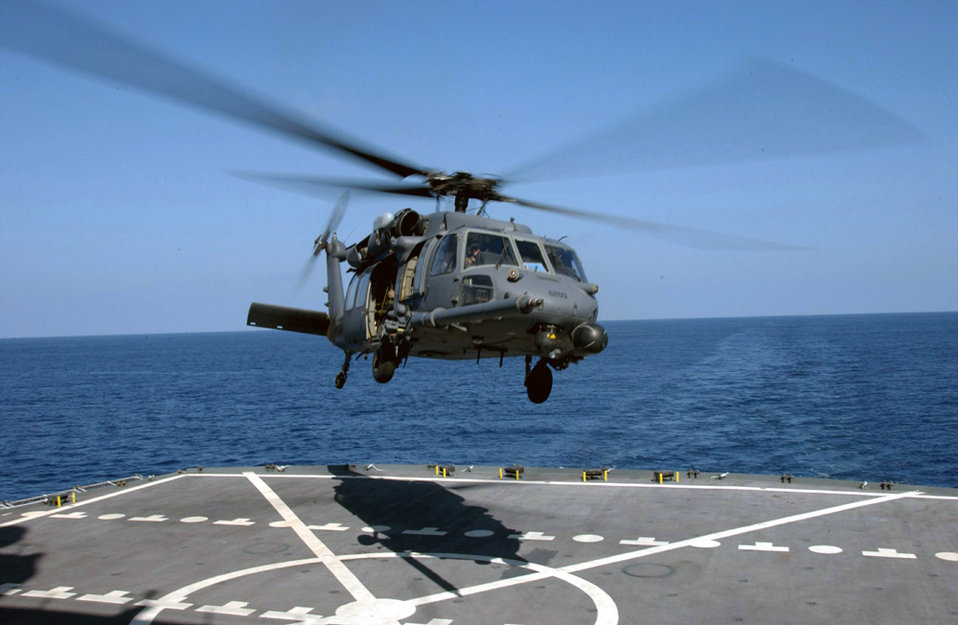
A 'chopper' landing

OVER THE PACIFIC OCEAN -- A 55th Rescue Squadron HH-60G Pave Hawk crew prepares to land onto a Navy ship near San Diego during water-rescue training. The helicopters are based at Davis-Monthan Air Force Base, Ariz.